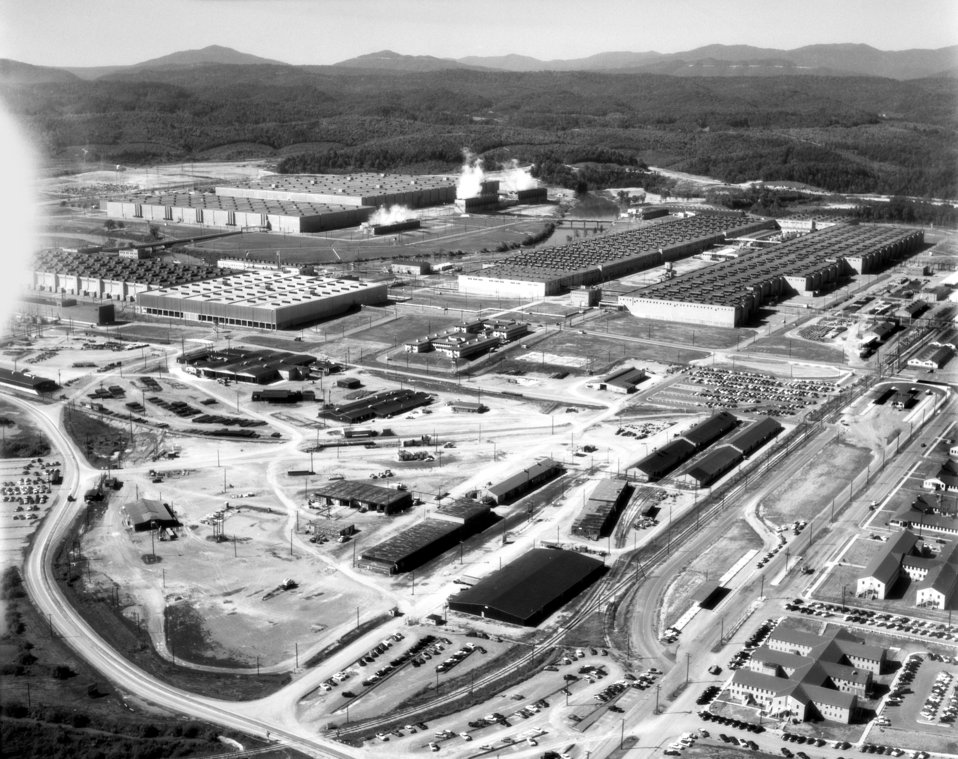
Air View of K-25, K-31 and K-33 1954 Oak Ridge

54-625 DOE photo Ed Westcott 9-22-1954 Oak ridge Tennessee